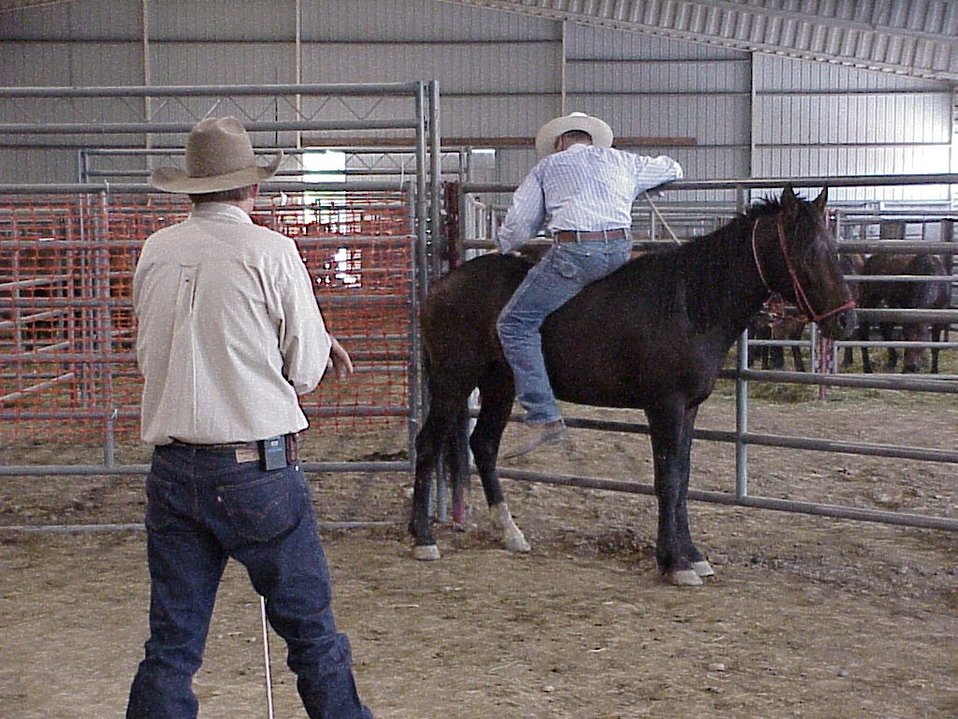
Horse Gentler Mario Johnson Lewiston Wild Horse and Burro Adoption Program Auction WHB indoor auction Cottonwood Field Office UCSC Upper Columbia Salmon Clearwater District